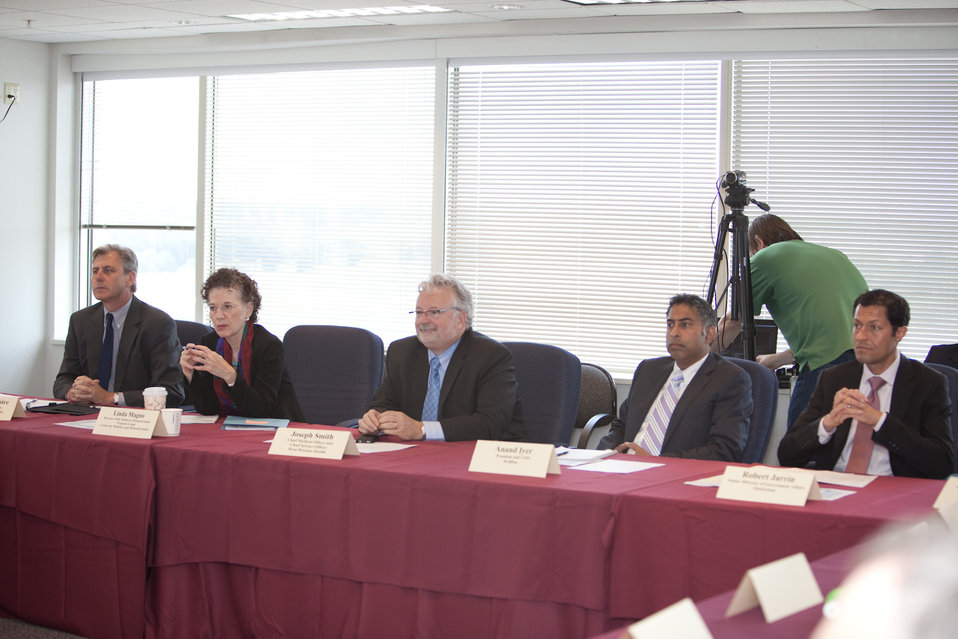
mHealth Attendees at FCC's Headquarters

Members from the health industry attendees Thomas Maguire (Senior Vice President) of Verizon, Linda Magno (Director of the Medicare Demonstrations Program Group) of CMS, Joseph Smith (Chief Medical Officer and Chief Science Officer) of West Wireless, Anand Iyer (President and COO) of WellDoc, Robert Jarrin (Senior Director of Government Affairs) of Qualcomm.

June 6, 2012 - FCC Headquaters | Washington, DC